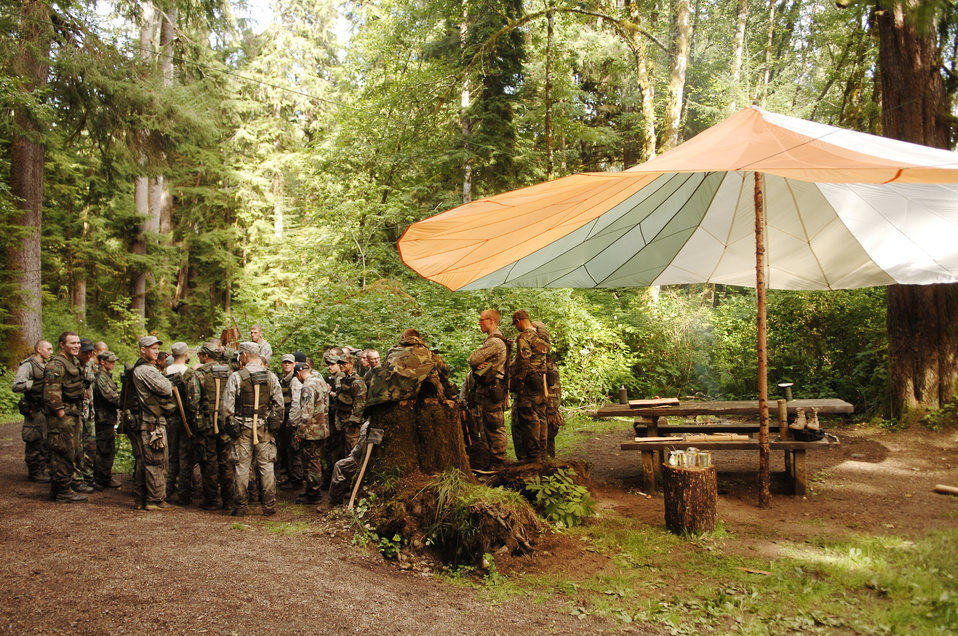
Students learn to survive in 'Tropics'

Students in the Survival, Evasion, Resistance and Escape Course from Fairchild Air Force Base, Wash., gather for instruction next to their fire circle Sept. 16, 2009 in the Hoh Rainforest in the Olympic National Forest in Washington.